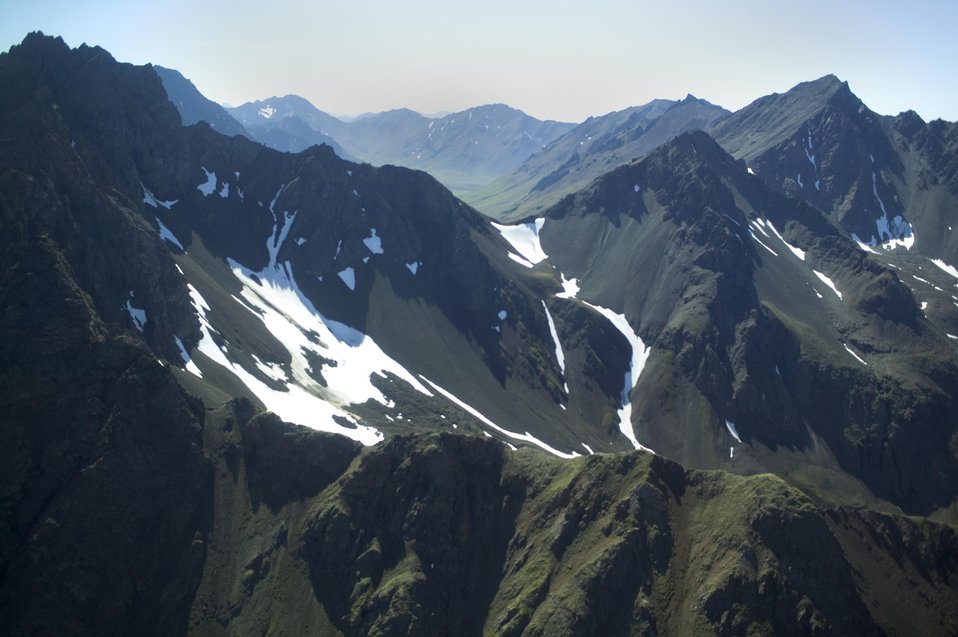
Togiak Nation Wildlife Refuge